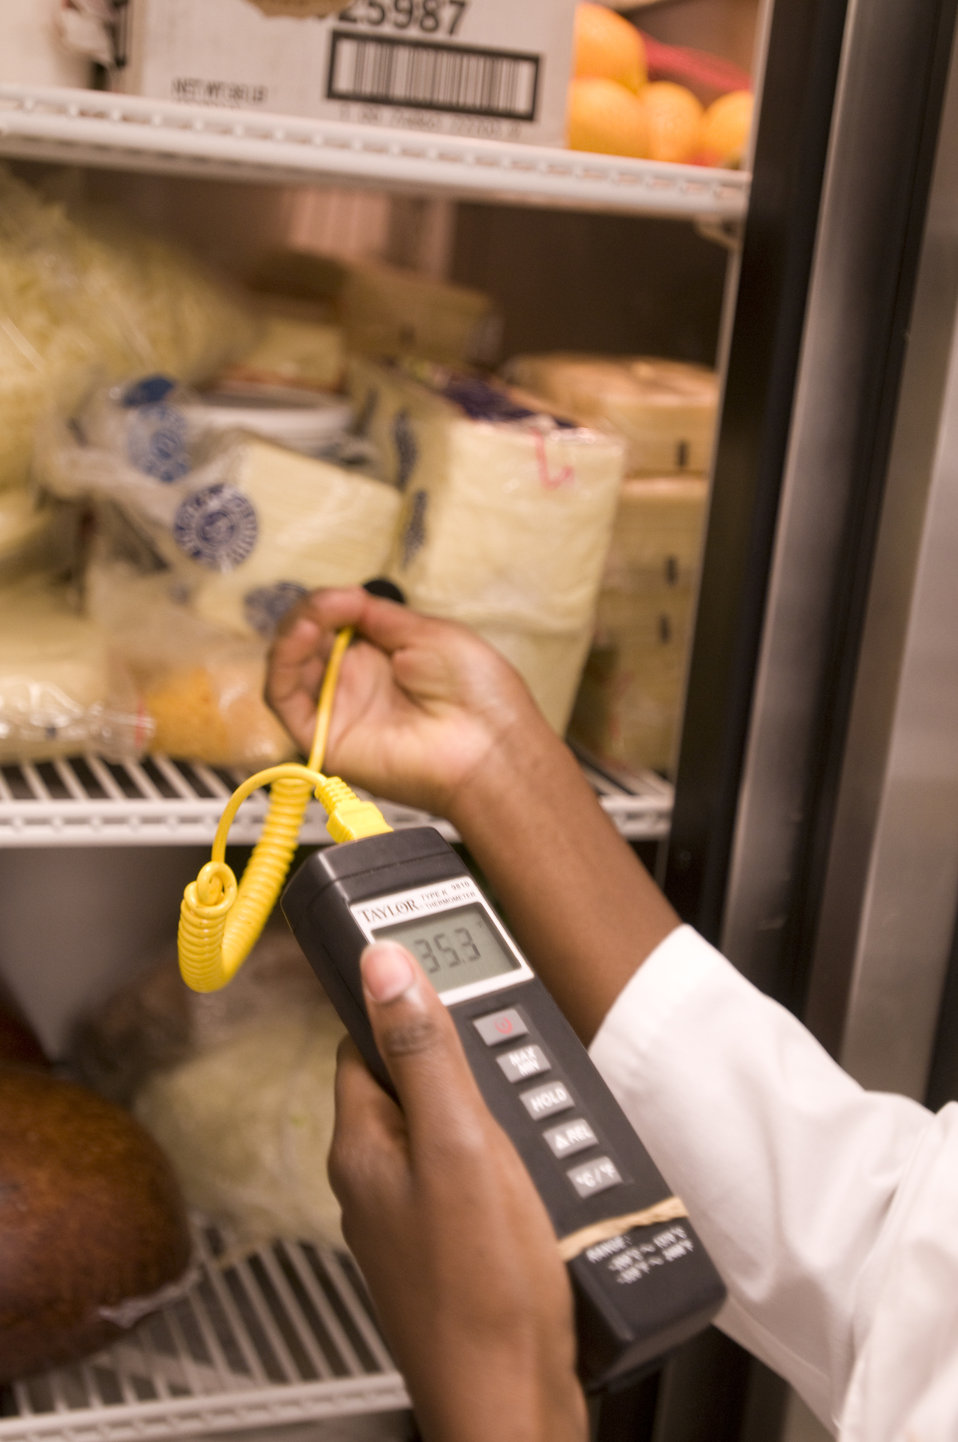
The state-appointed health inspector pictured here at right, was in the process of performing an assessment of this kitchen's sanitary condition. At this point in her inspection, she was taking thermal readings of contents within a refrigerator, using an electronic thermometer. Note that she was taking a thermal reading of a stack of processed cheese slices. At this moment, the thermometer was giving a reading of 35.3oF, indicating a drop from 39.2oF.